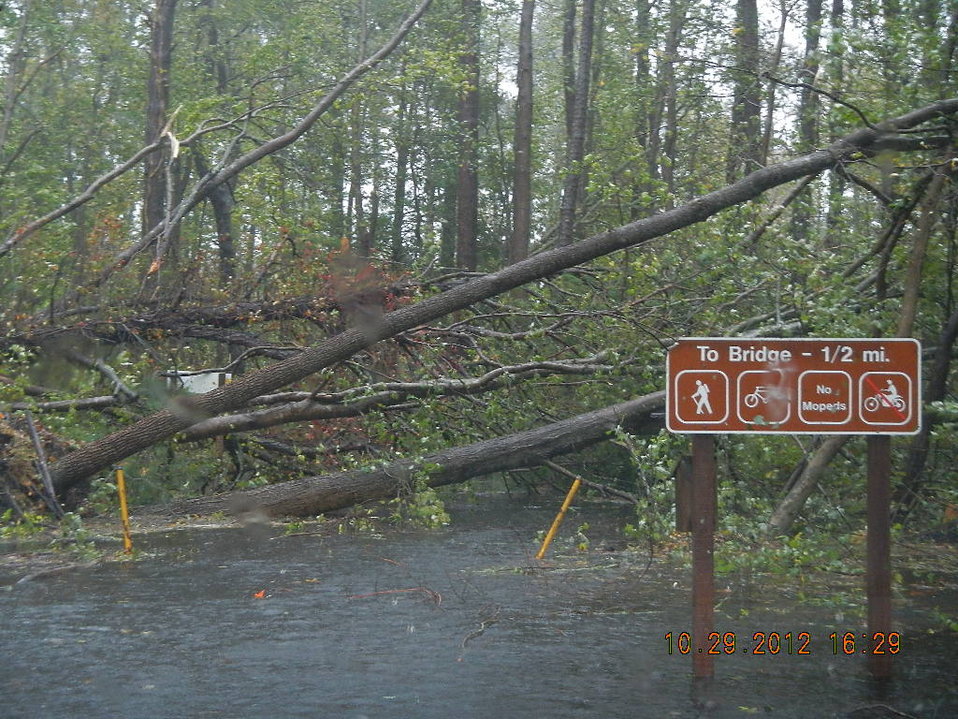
Downed tree at Chincoteague National Wildlife Refuge (VA)

Chincoteague National Wildlife Refuge sustained downed trees and flooding during Hurricane Sandy.